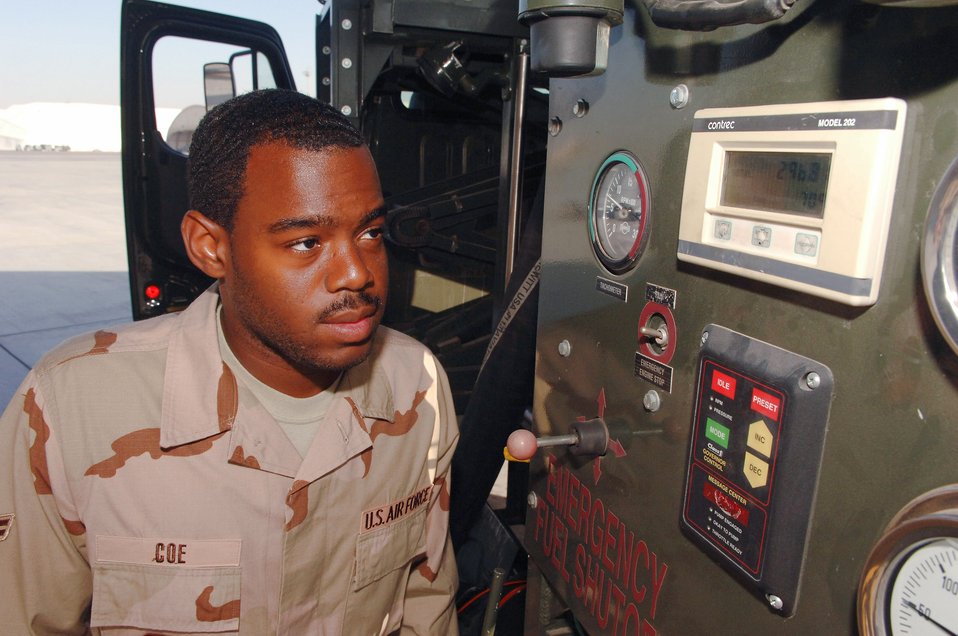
Moody AFB Airman breaks AF refueling record

Airman 1st Class Zechariah Coe, fuels distribution operator, 380th Expeditionary Logistics Readiness Airman 1st Class Zechariah Coe watches the counter for JP-8 jet fuel being pumped into a KC-10 Extender as he breaks the Air Force record for the largest amount of fuel pumped in a month Feb. 25 in Southwest Asia. Airman Coe took on every refueling opportunity he could to pump the more than 3,573,989 gallons of fuel that was required to break the previous record. Airman Coe is a fuels distribution operator with the 380th Expeditionary Logistics Readiness Squadron.